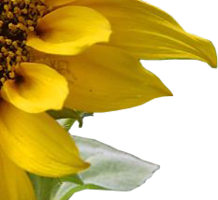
עברית: חלקה הפנימי של החמנייה.